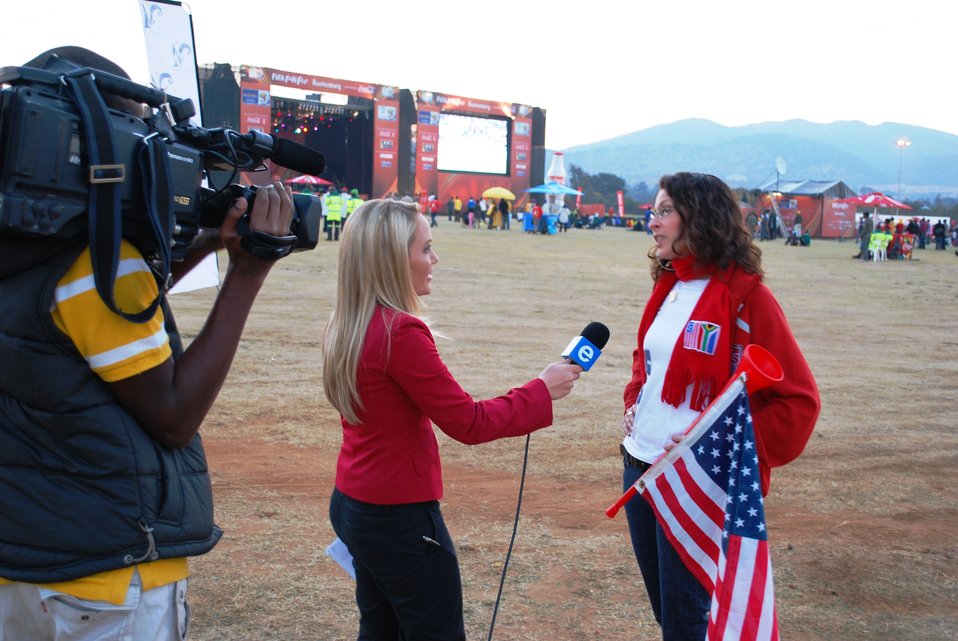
South African Journalist Interviews Press Attache Sharon-Hudson Dean

A South African eNews journalist interviews U.S. Embassy Pretoria Press Attache Sharon-Hudson Dean in the fan park outside of the Royal Bafokeng stadium in Rustenburg, South Africa, on June 12, 2010.